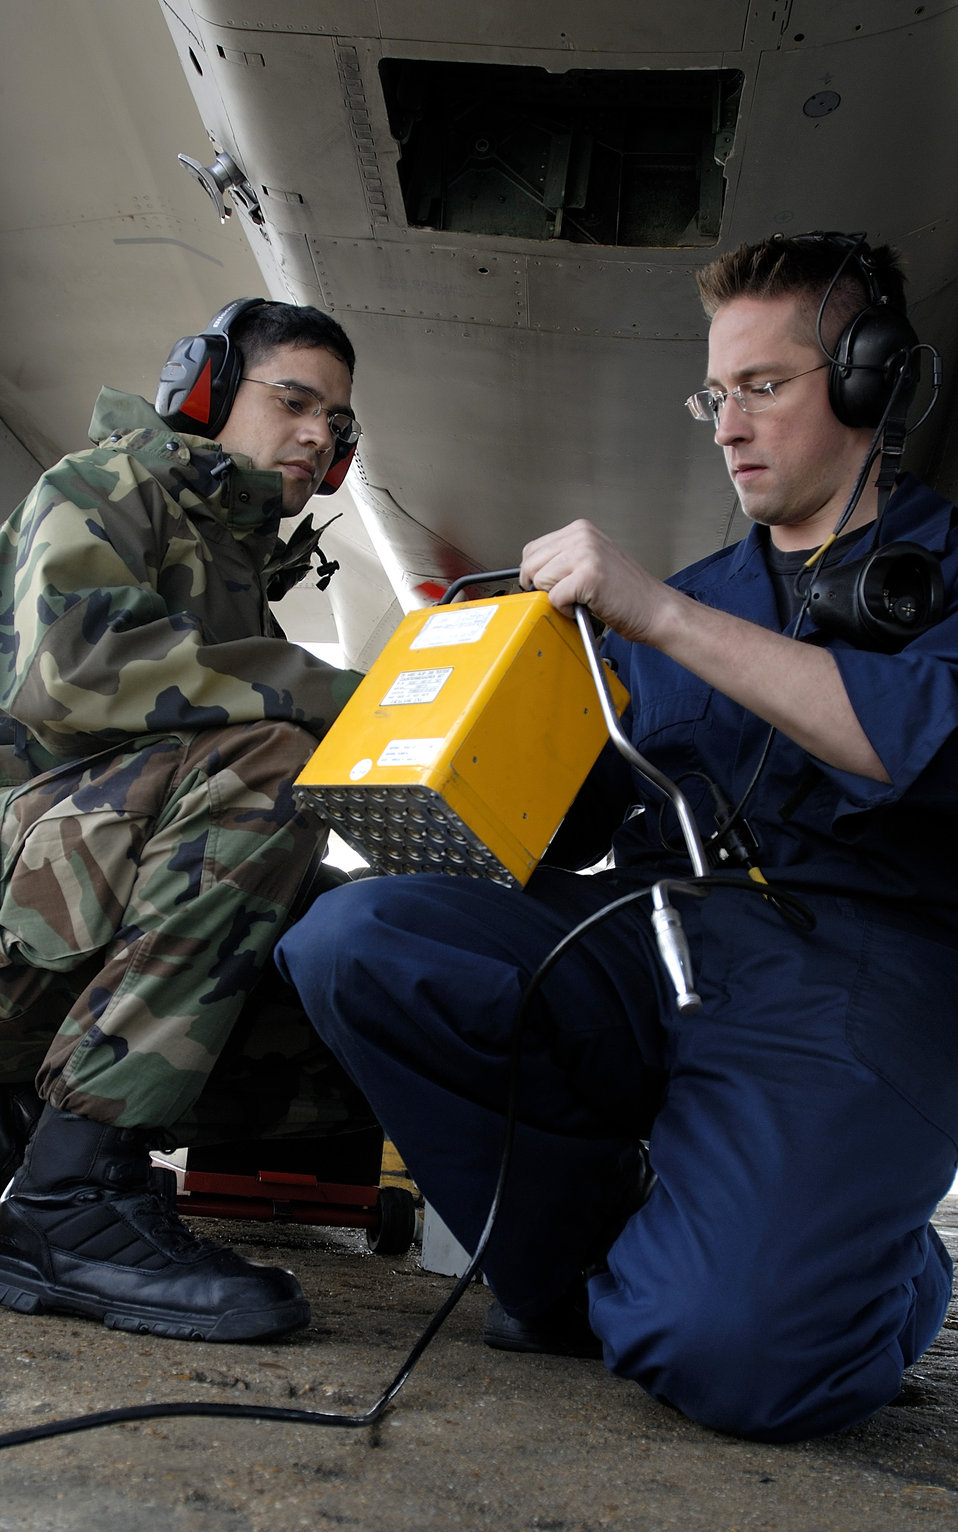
F-15 preventive maintenance

Staff Sgt. James Skonieczny and Senior Airman Ramses Garavito inspect an F-15 Eagle Tuesday, March 14, 2006, at Langley Air Force Base, Va. Both Airmen are with the 71st Aircraft Maintenance Unit.